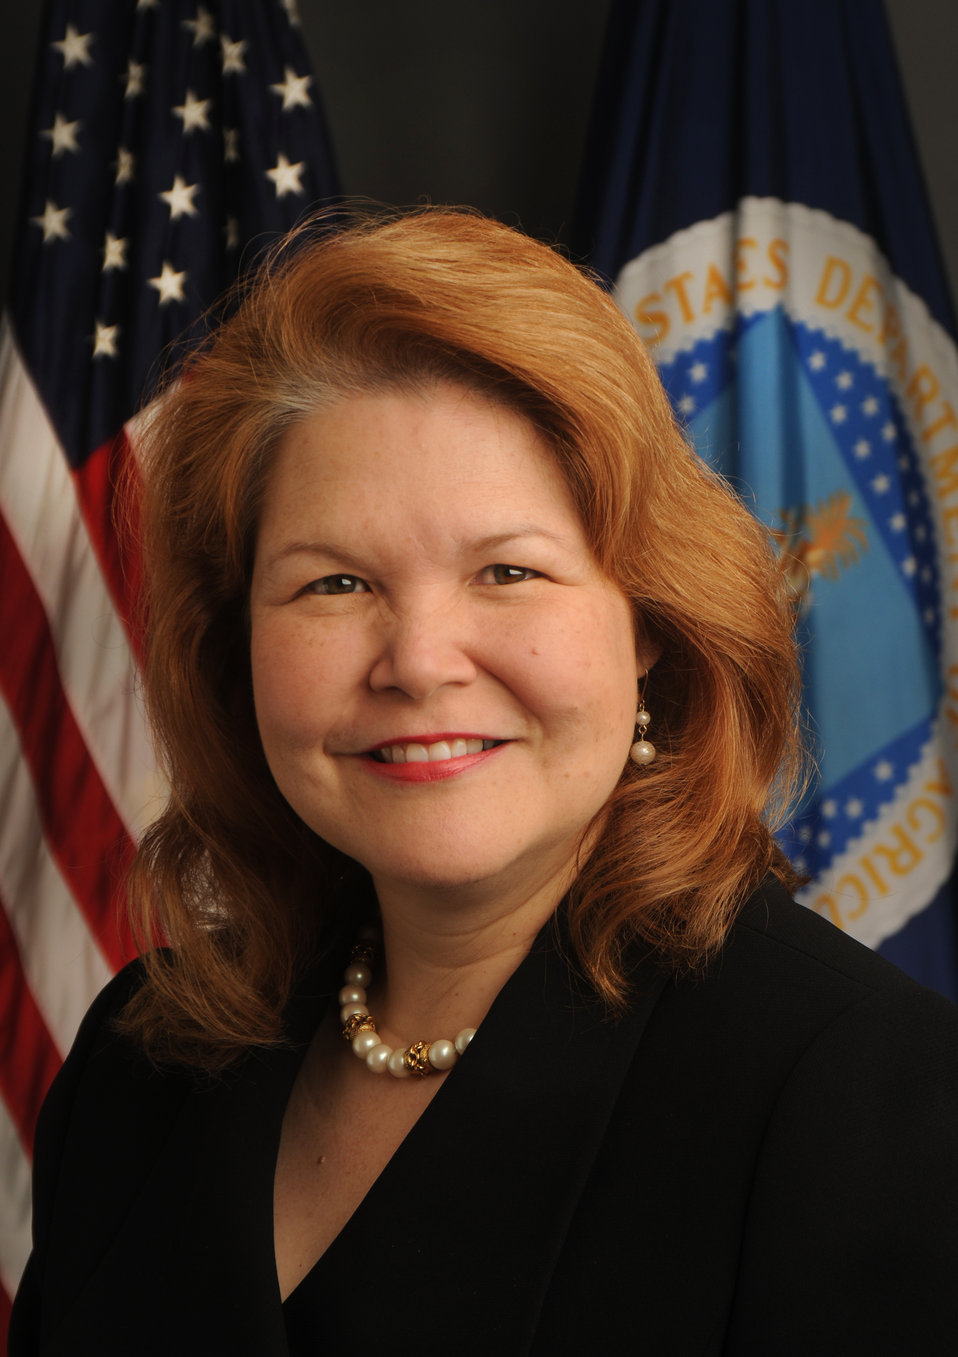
09di1089-010 Administrator for Rural Development Business and Cooperative Service Judith A. Canales

Administrator for Rural Development Business and Cooperative Service Judith A. Canales.